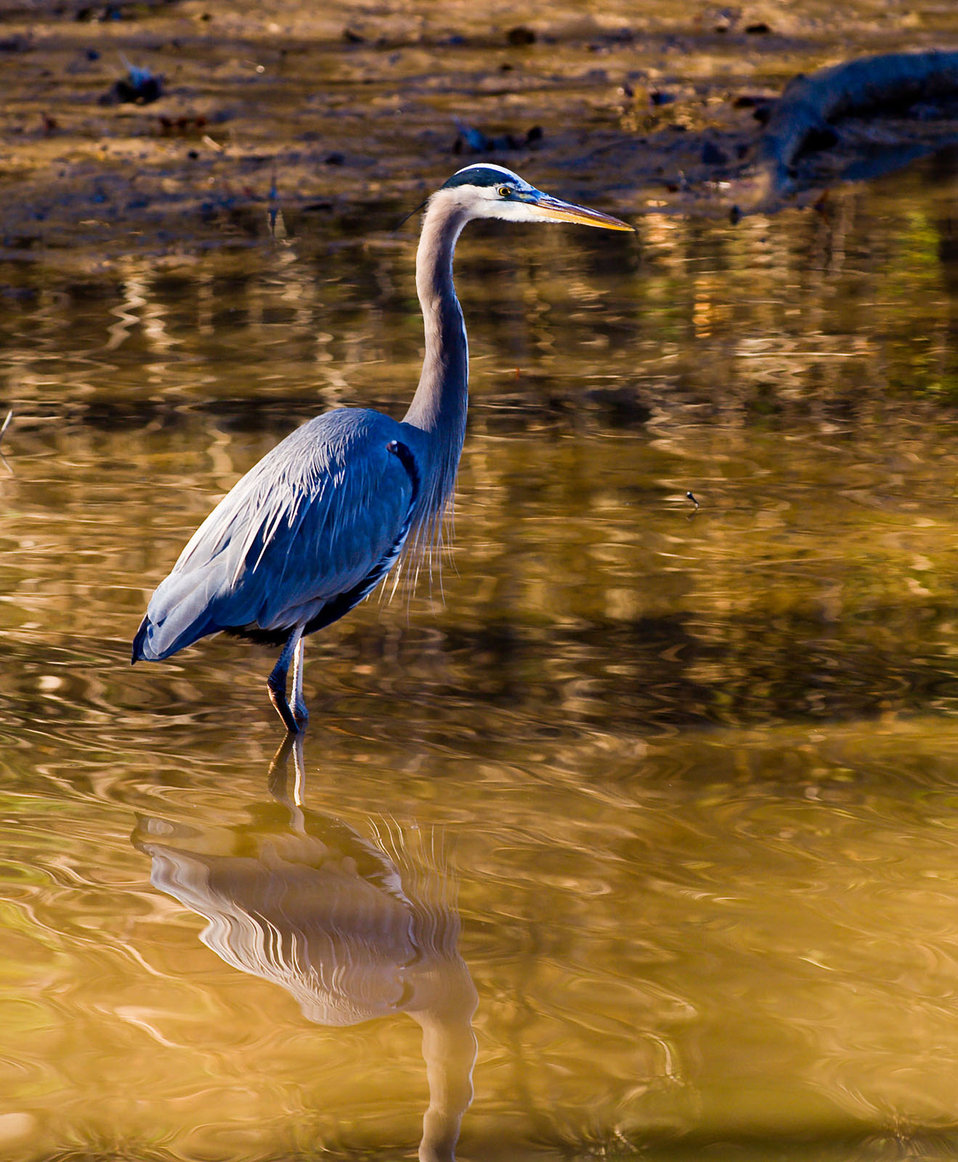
Streams Provide Crucial Habitat for Fish and Wildlife

Rain dependent streams and streams that only flow for part of the year are unique and diverse habitats that can support thousands of species, including plants, fish, amphibians, birds and mammals. These streams are important as spawning and nursery habitats, seasonal feeding areas, refuge from predators and competitors, shelter from extreme weather and travel corridors.

Many stream species, including fish, snails, crayfish, insects and salamanders, are now in danger of extinction as a result of human actions. A few dozen species are already listed under the U.S. Endangered Species Act; hundreds of others are rare enough to be considered for listing.

Streams that flow for only part of the year provide crucial habitat, food and water for plants and wildlife. They provide forage, cover, nesting and movement corridors for wildlife. In the arid West, vegetation and wildlife near these streams – which often have water flowing just below the surface even when the surface looks dry – is significantly higher than in the surrounding uplands.